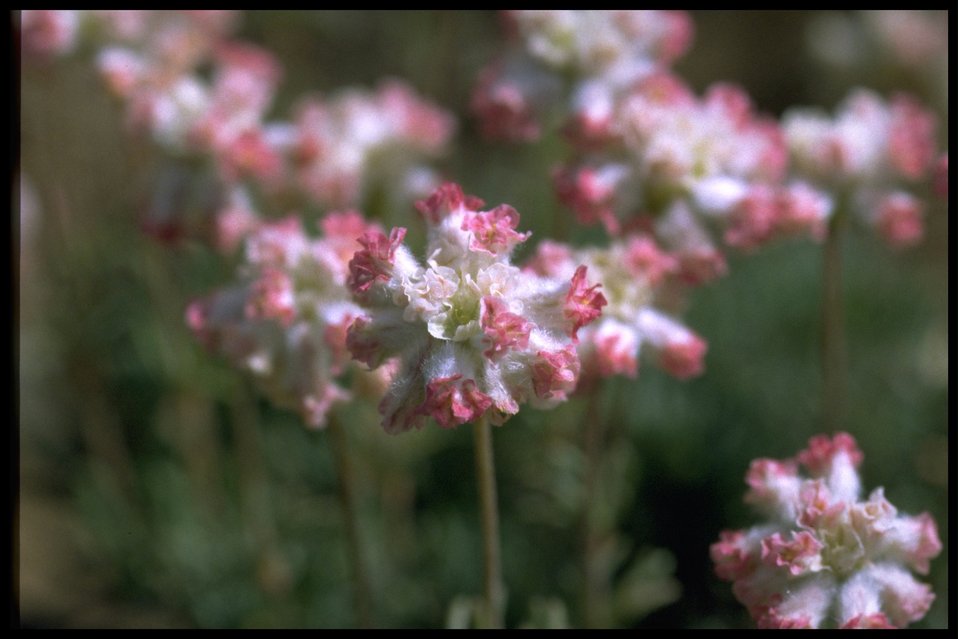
Closeup shot of Thyme-leaved buckwheat wildflowers.